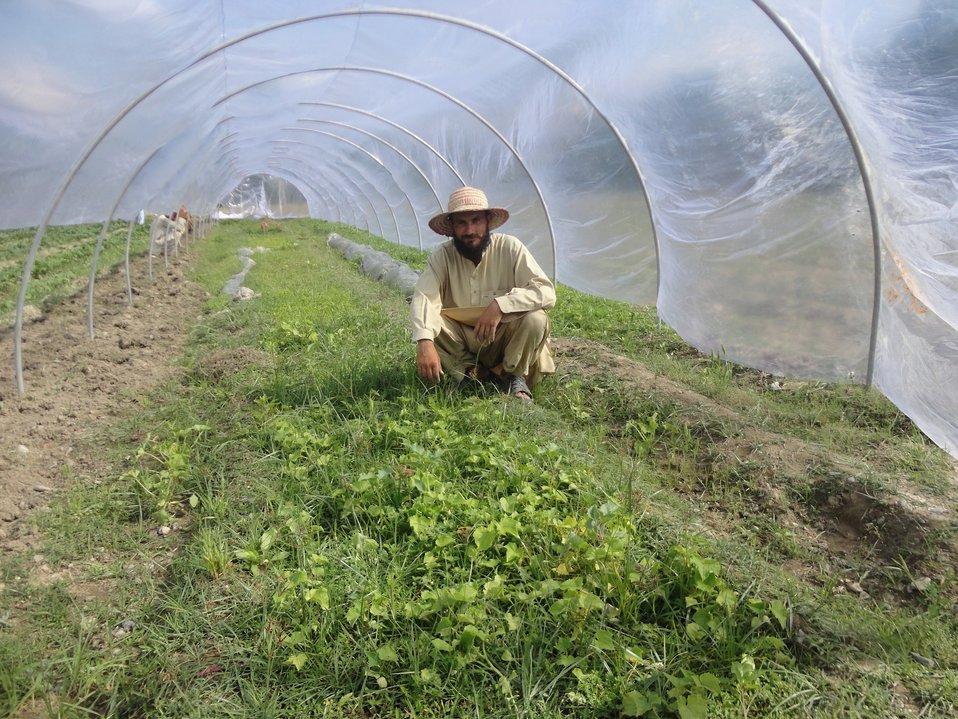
TWWA2